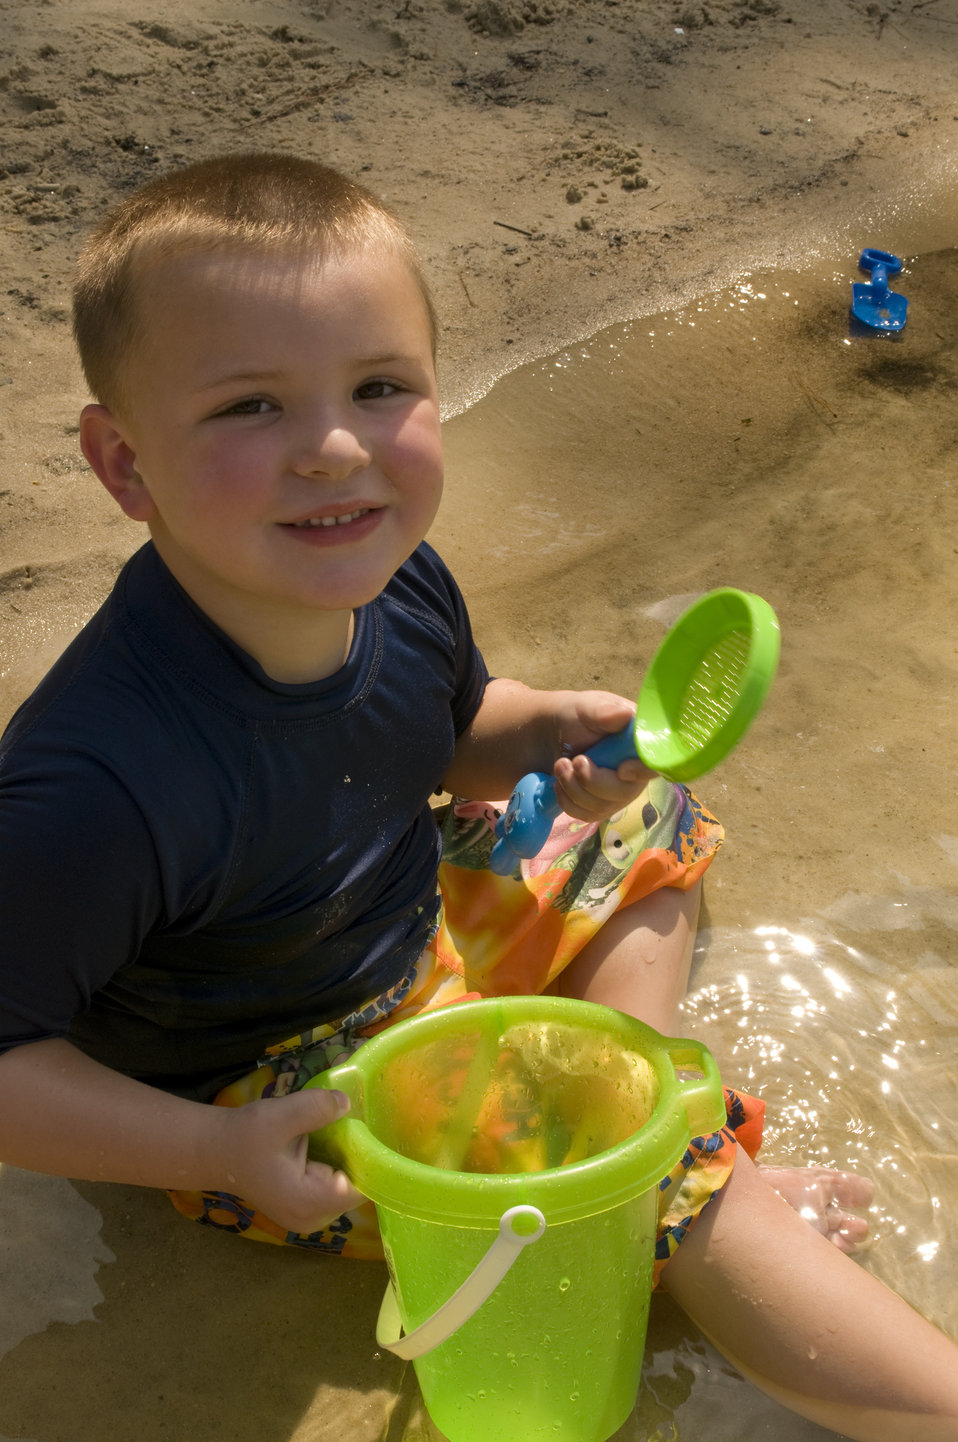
This smiling young boy was seated at the water's edge holding a toy bucket with his right hand, and a plastic strainer with his left. Sunscreen had been applied to his minimally-exposed skin, and he was wearing a darkly-colored shirt in order to prevent overexposure to the sun's harmful ultraviolet rays.